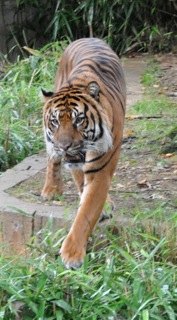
Save Vanishing Species Stamp First Day of Issue